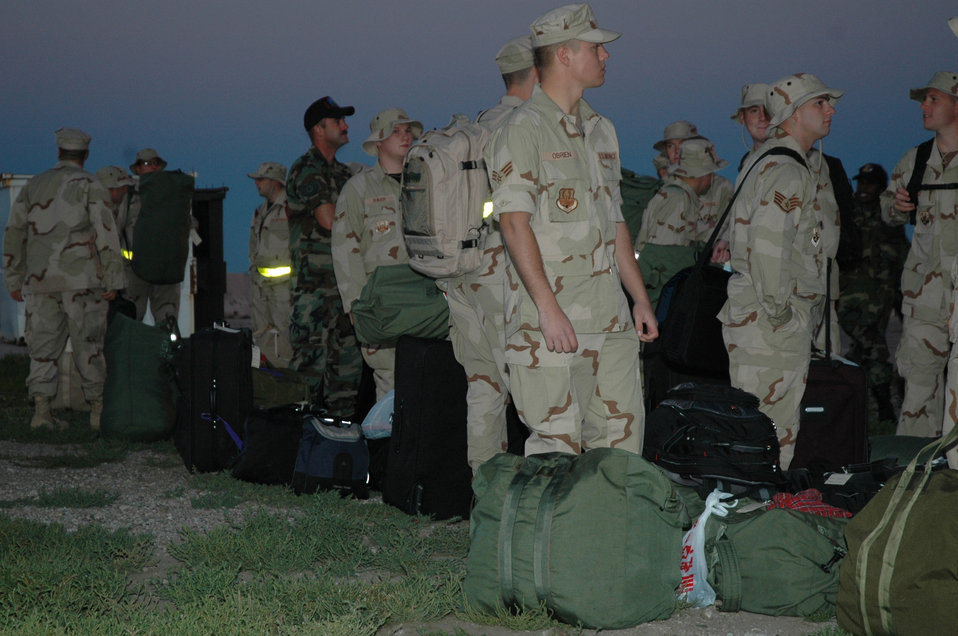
Preparing to deploy

Airmen wait to board their aircraft before deploying to Southwest Asia from Ellsworth Air Force Base, S.D., in September. More than 500 base Airmen left to support operations in Iraq and Afghanistan.